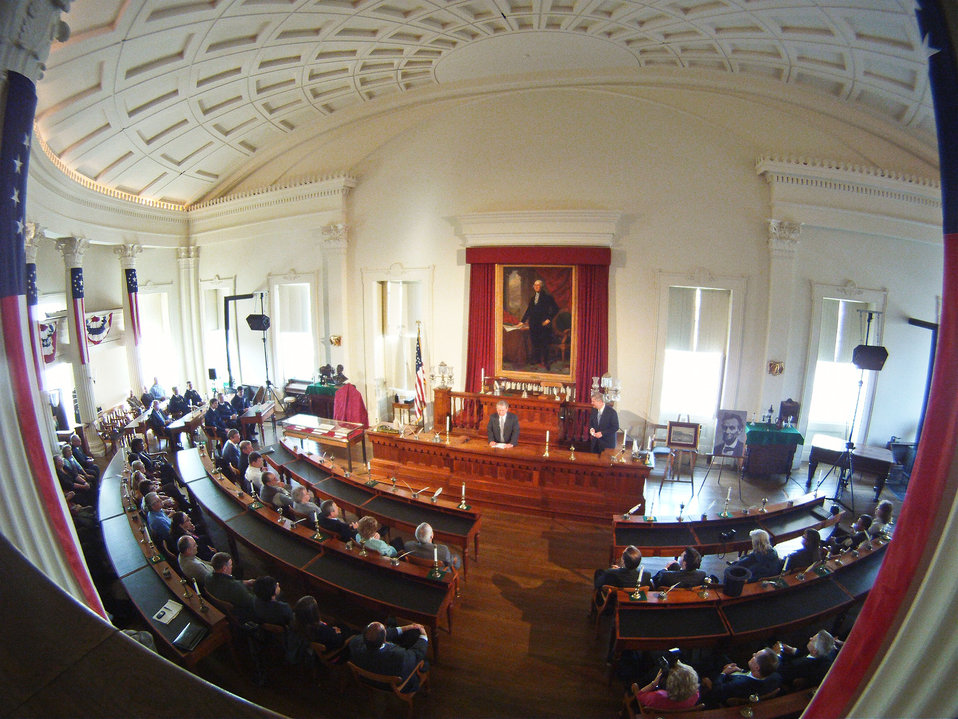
Illinois Department of Agriculture Director Jim Larkin makes opening remarks and introduced Agriculture Secretary Tom Vilsack during the unveiling of the 150th Anniversary graphic at the Old State Capitol in Springfield, IL, to commemorate the creation of the U.S. Department of Agriculture on Wednesday, November 2, 2011.